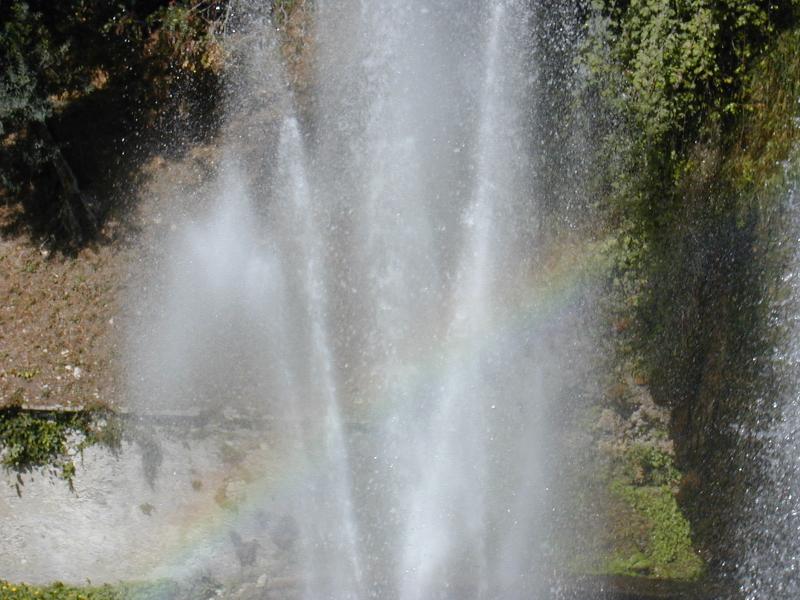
000910 tivoli v d este 33 arcobaleno